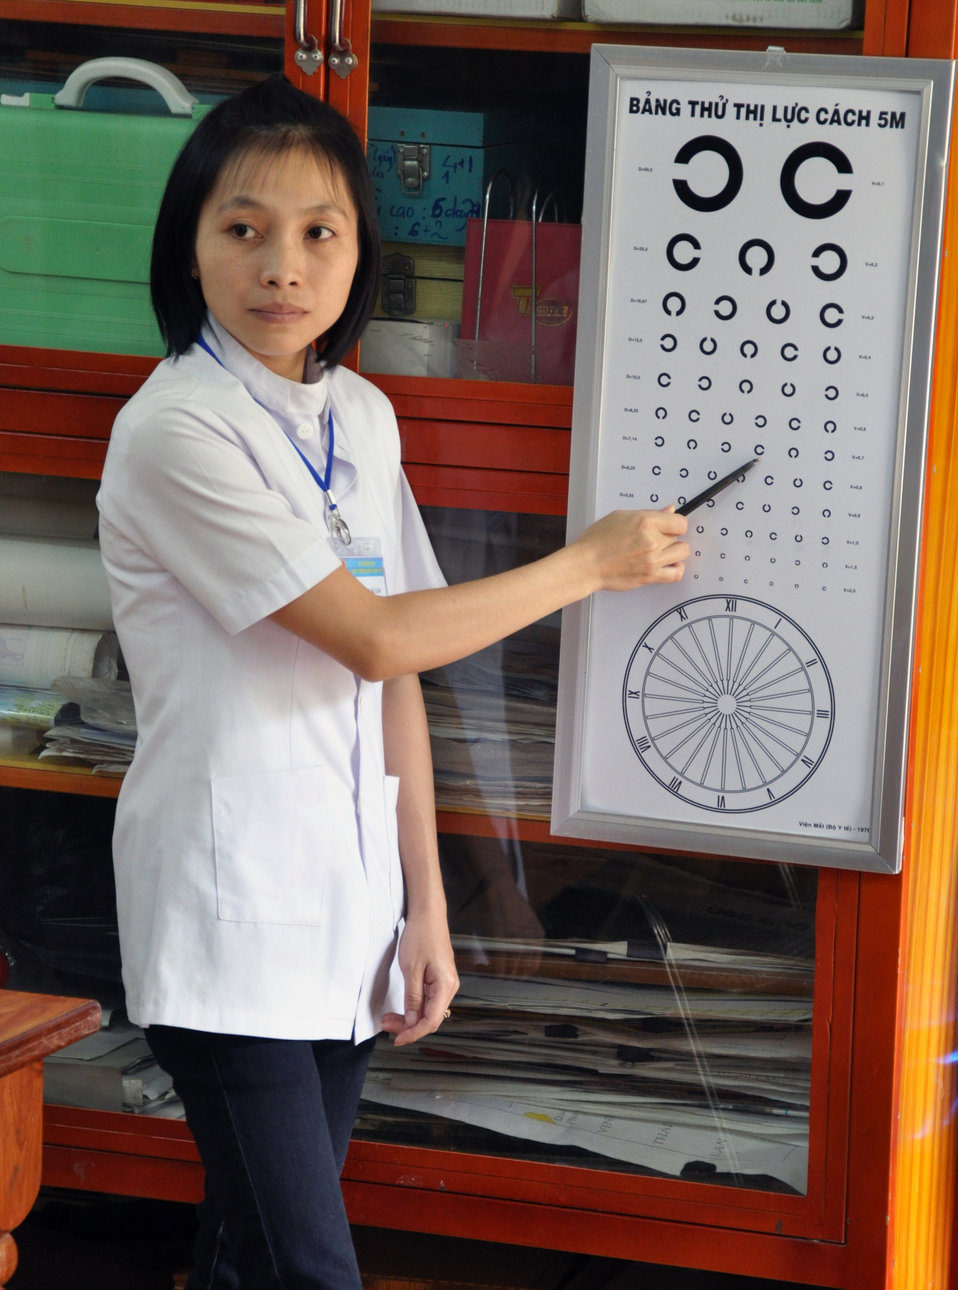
Eye screening at Phan Dinh Phung Primary School

USAID and HKI support refractive error screening examination for students at Phan Dinh Phung Primary School in Kon Tum.